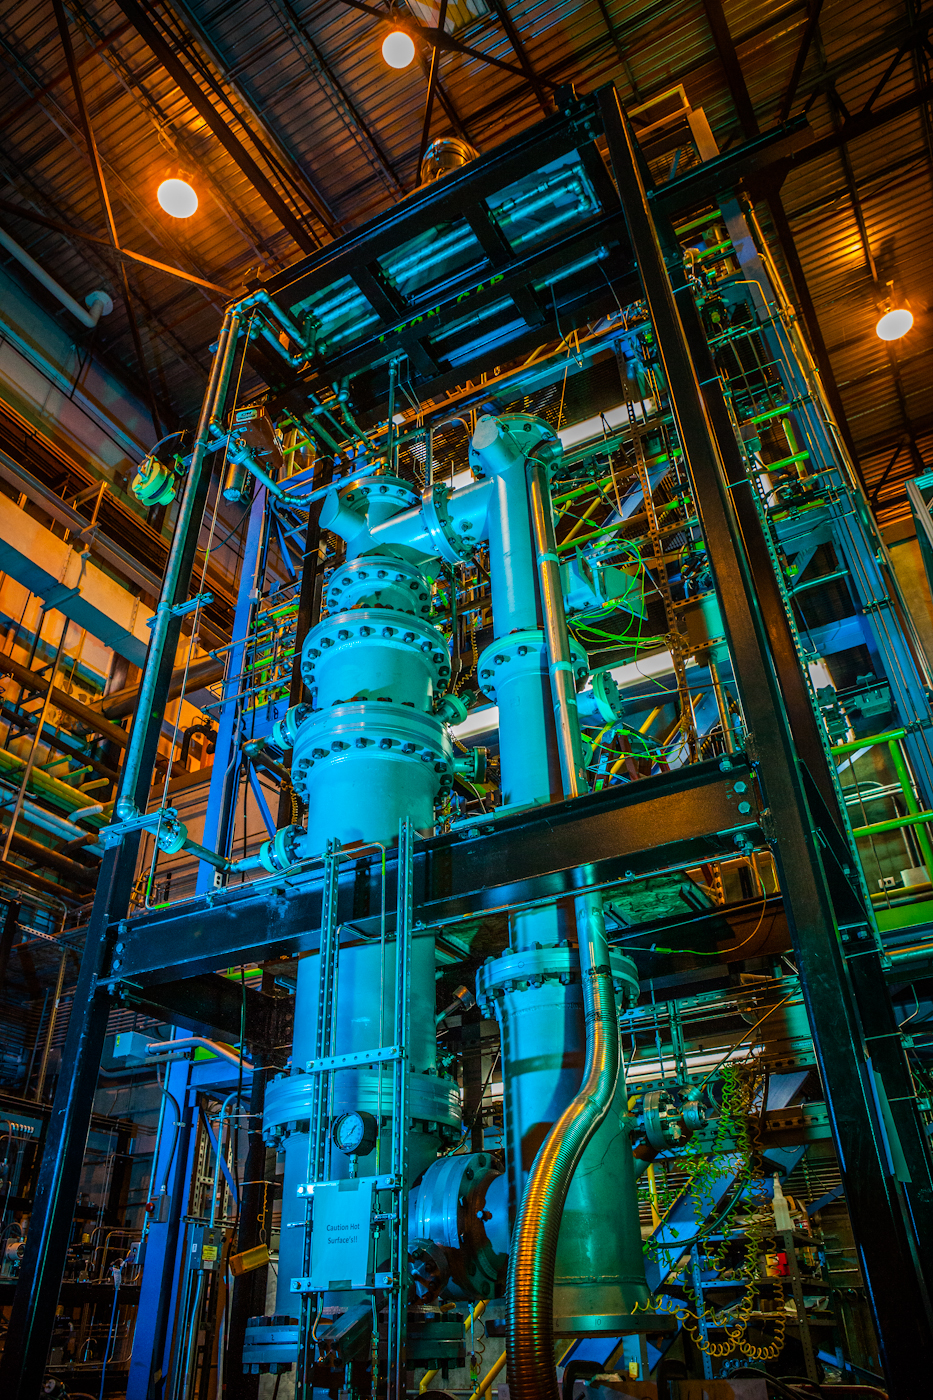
CHEMICAL LOOPING REACTOR AT NATIONAL ENERGY TECHNOLOGY LABORATORY.